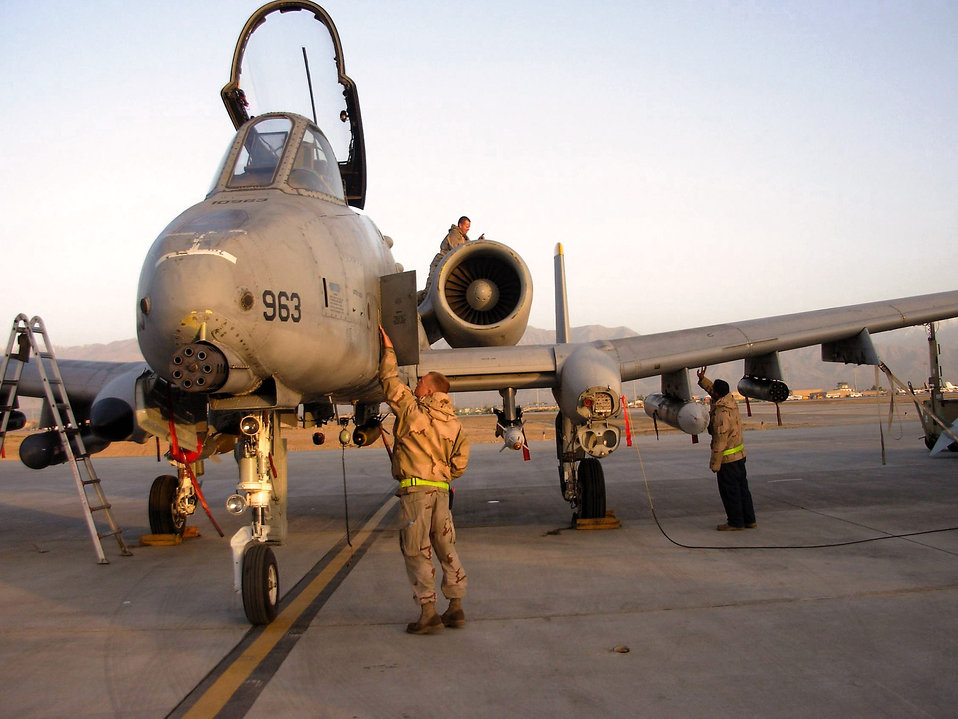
Keeping the A-10 fit to fight

Senior Airman Justin Lovejoy inspects the fuselage of an A-10 Thunderbolt II at Bagram Air Base, Afghanistan, while Staff Sgt. Isaac Ibarra inspects the wing during a thru-flight inspection. Up on one of the two engines, Staff Sgt. Shawn Mercier pulls an oil sample. The crew chiefs, assigned to the 81st Expeditionary Aircraft Maintenance Unit, are deployed from Spangdahlem Air Base, Germany.